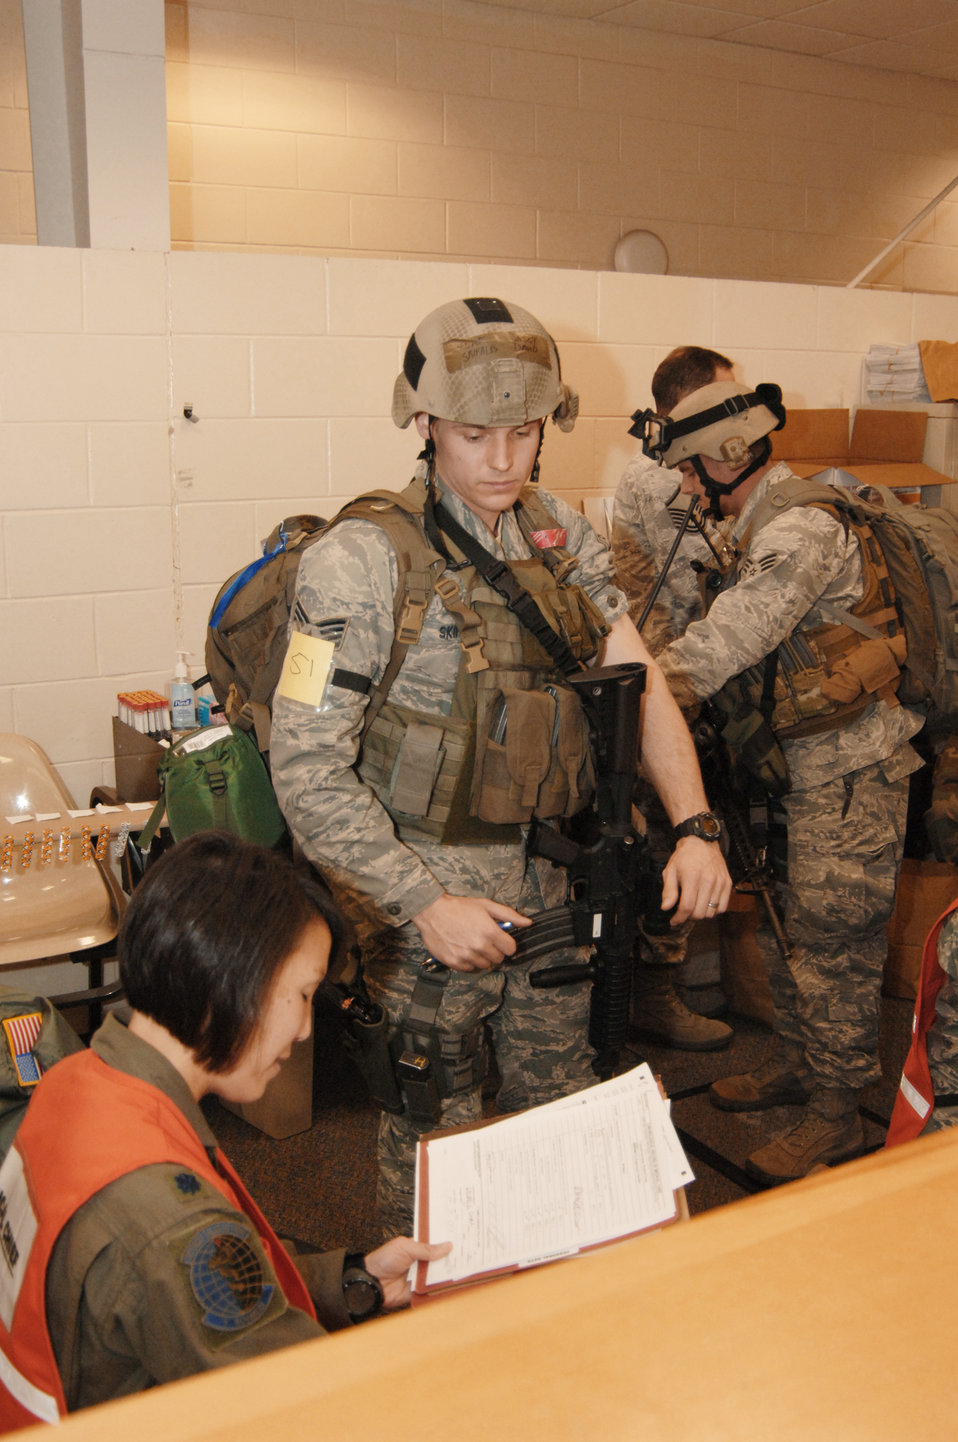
Hurlburt Field Airmen prepare to assist in Haiti

Staff Sgt. David Skipalis processes through a mobility line Jan. 13, 2010, at Hurlburt Field, Fla. Airmen from the 1st Special Operations Wing are part of a humanitarian relief mission to Haiti. Sergeant Skipalis is assigned to the 1st Special Operations Security Forces Squadron.